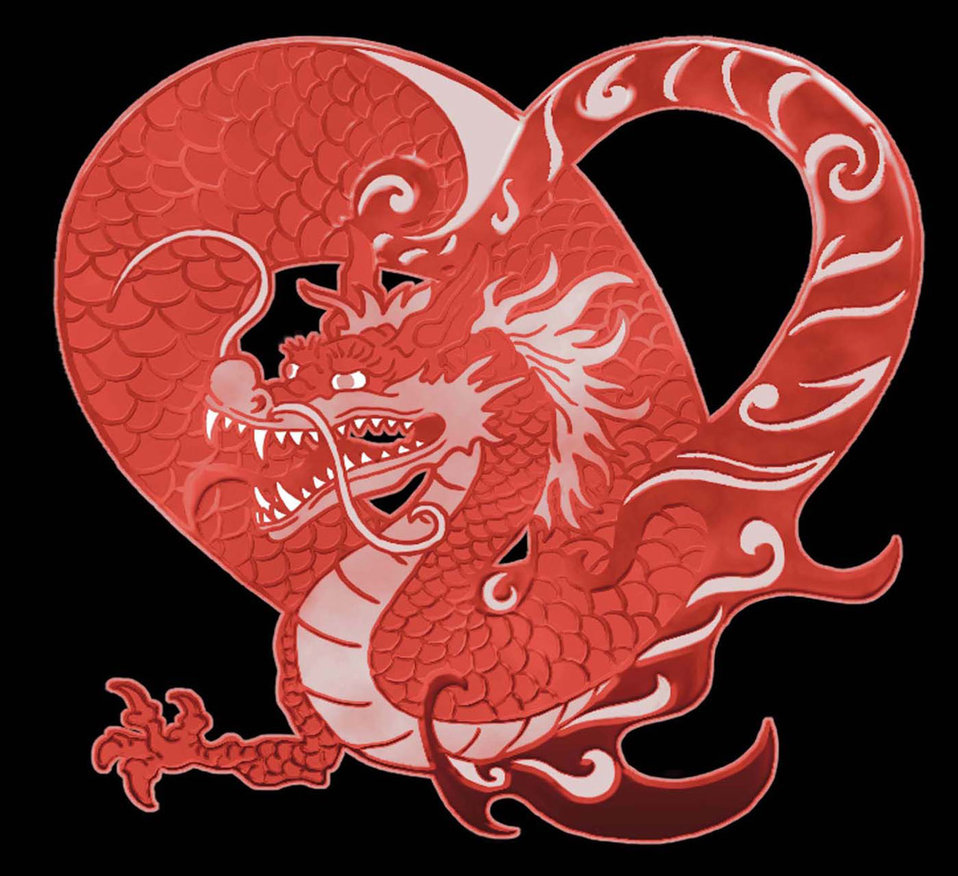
Dragon heart picture, designed for printing onto garments..